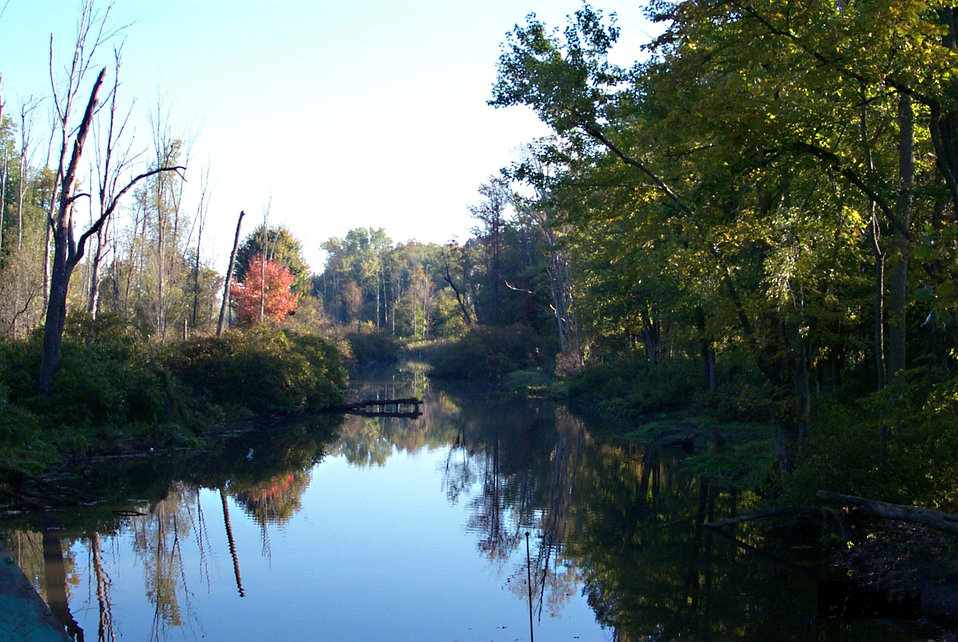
Photo of the Week - Oak Orchard Creek (NY)

Photo of the Week - 12/5/11

Oak Orchard Creek at Iroquois National Wildlife Refuge in New York provides a primitive route for canoes and kayaks.